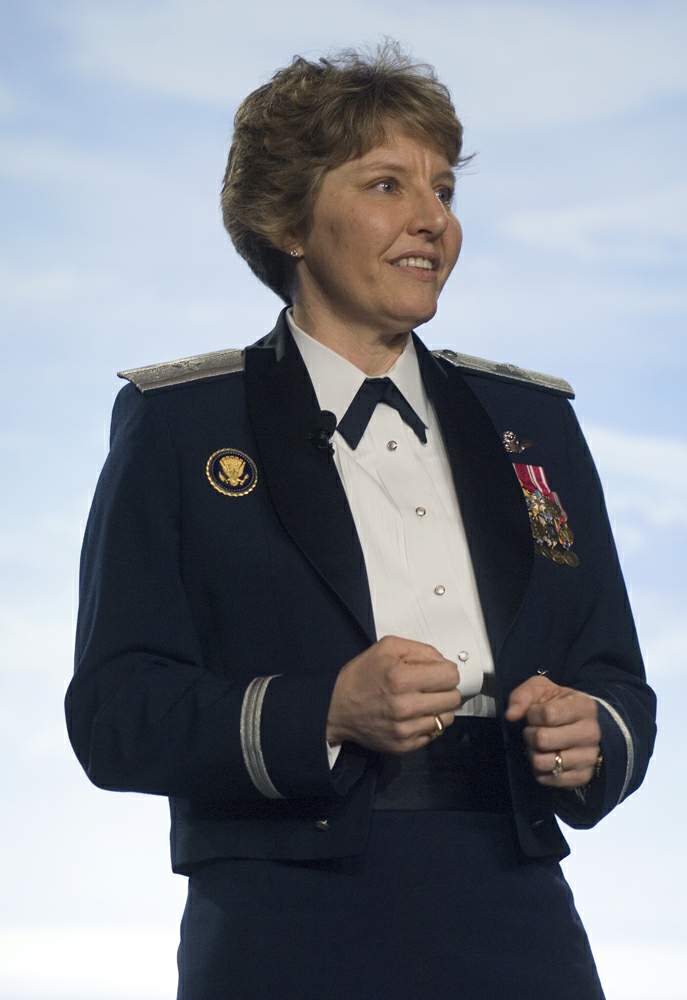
General participates in NCAA Women's Final Four

Brig. Gen. Michele D. Johnson addresses participants of 2008 Women's Final Four Salute dinner as guest speaker April 4 in Tampa, Fla. General Johnson is the most decorated female athlete in U.S. Air Force Academy history. She was selected by the NCAA to speak to women athletes and participate at numerous NCAA events before the 2008 NCAA Women's Final Four basketball tournament. General Johnson is the deputy director on the war on terrorism, Strategic Plans and Policy Directorate on the Joint Staff at the Pentagon.